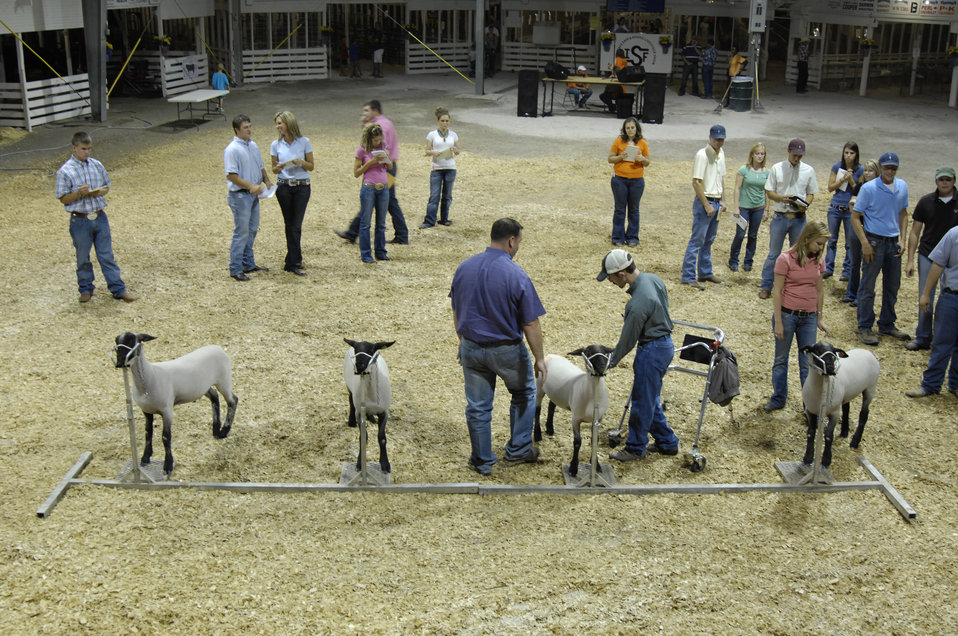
Agriculture Instructor Chris Mullinix (center) coaches the Butler County Community College, El Dorado, Kansas, nationally recognized livestock judging team on the finer points of lamb anatomy at the Coffeyville Fair in Coffeyville, Kansas on August 4, 2009.